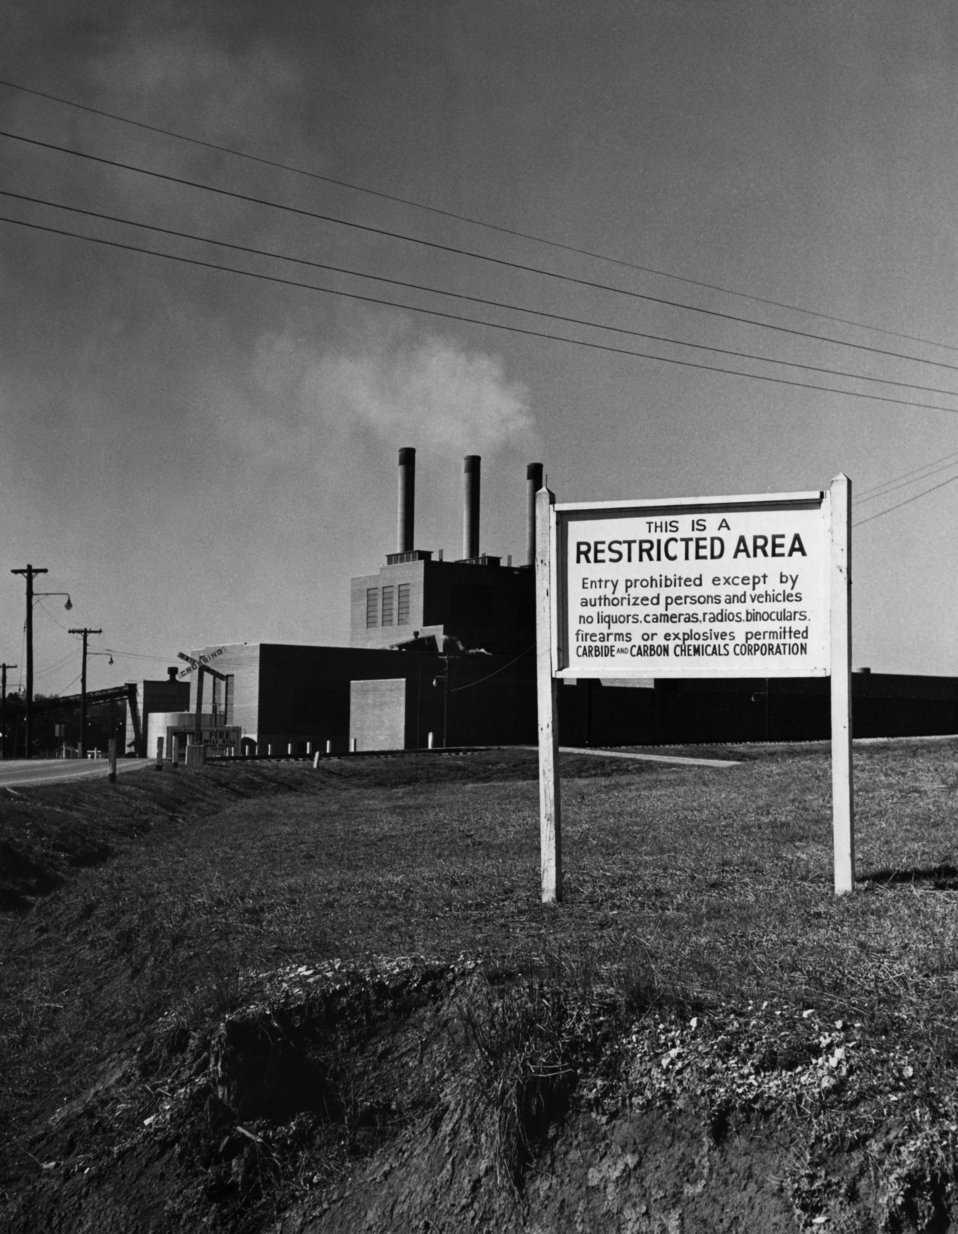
K-25 Steam Plant 1949

5452-2 DOE photo Ed Westcott 2-17-1949 Oak Ridge Tennessee